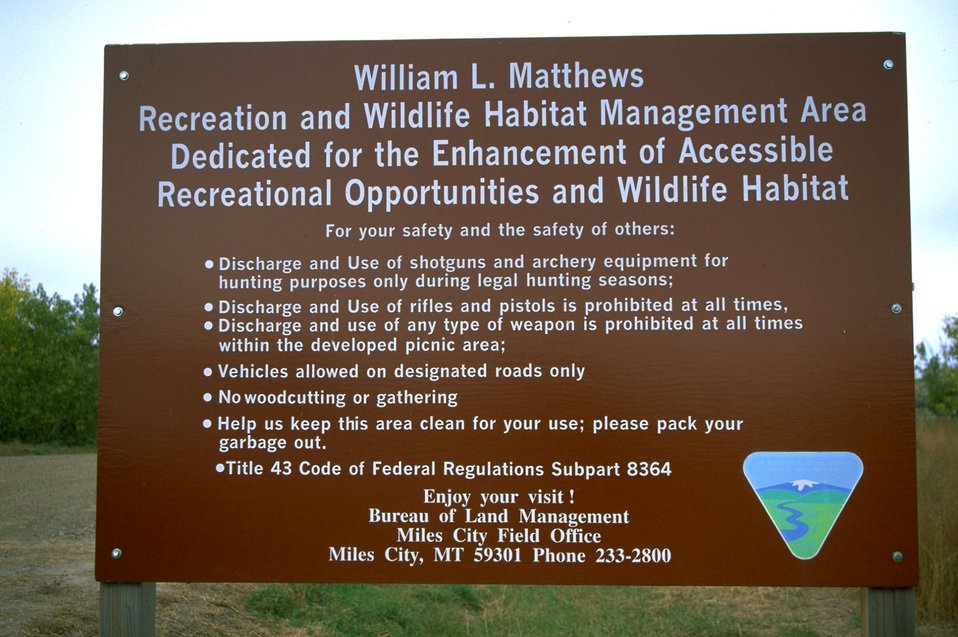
Entrance sign to the Matthews Recreation Site